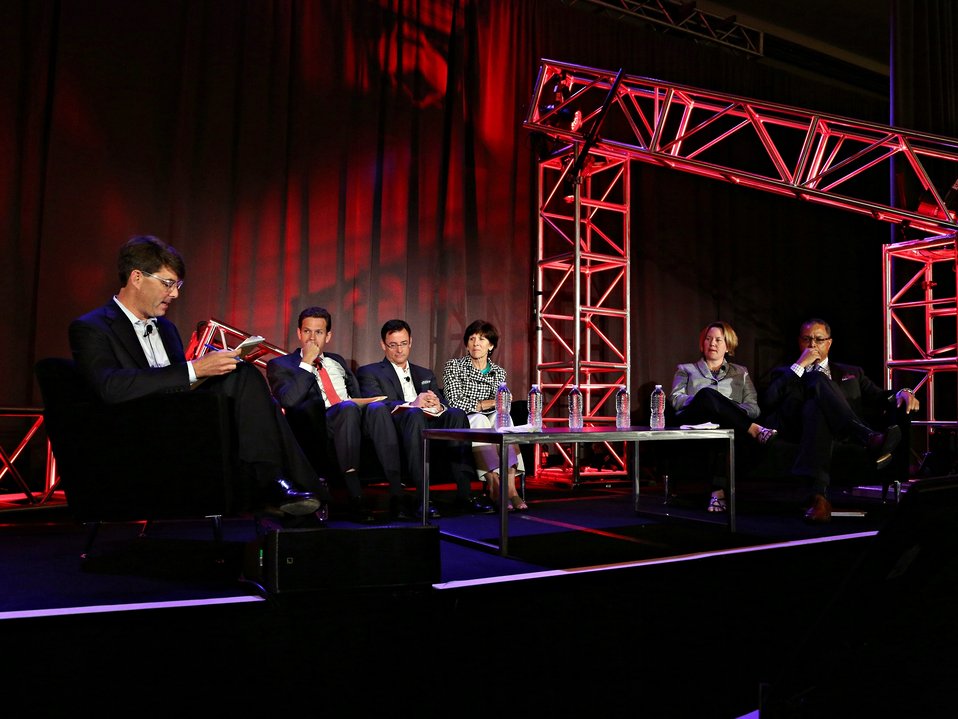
Day 2 Keynote Session 11

Day 2 headlining panel - SunShot Initiative: The Future is Bright